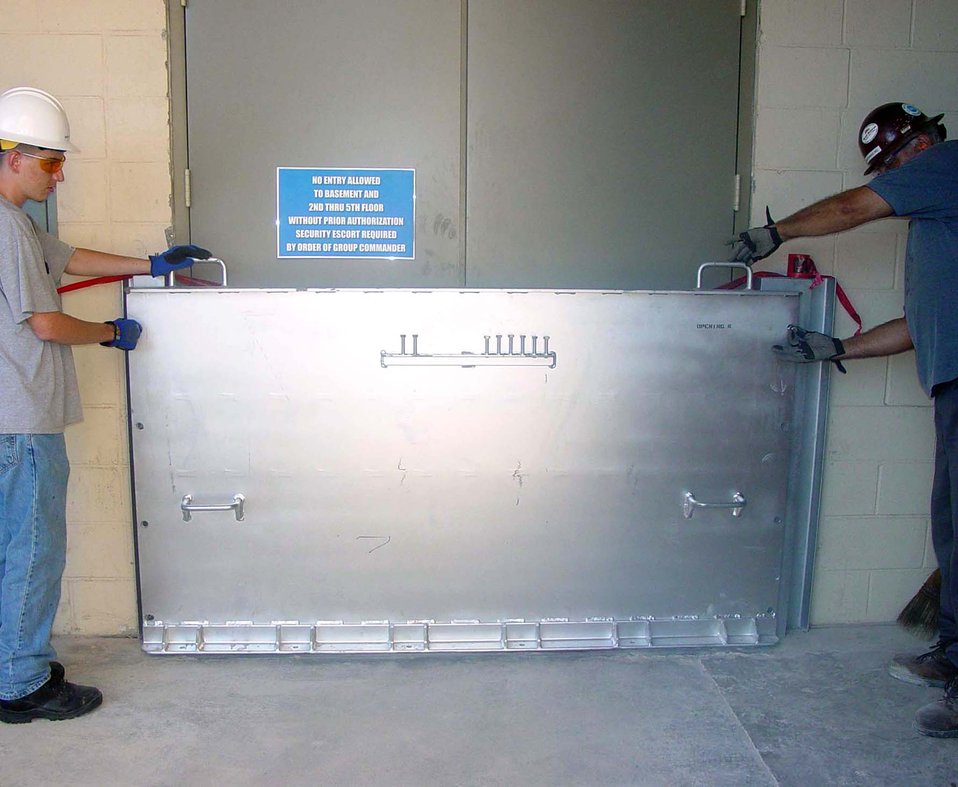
Keesler Medical Center rebounds from Katrina

Josh Spurlin, left, and Paul Mitchell, contractors from Atlanta, install one of 28 custom-made flood doors at the Keesler Air Force Base, Miss., Medical Center Aug. 1.